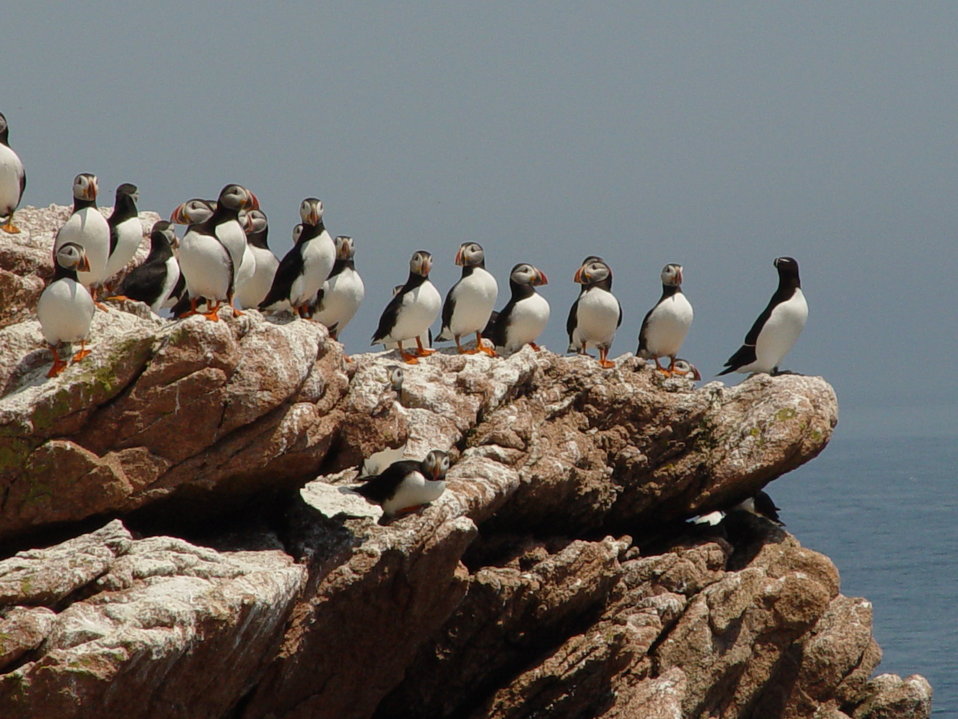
Atlantic puffin lineup led by a razorbill at Maine Coastal Island National Wildlife Refuge